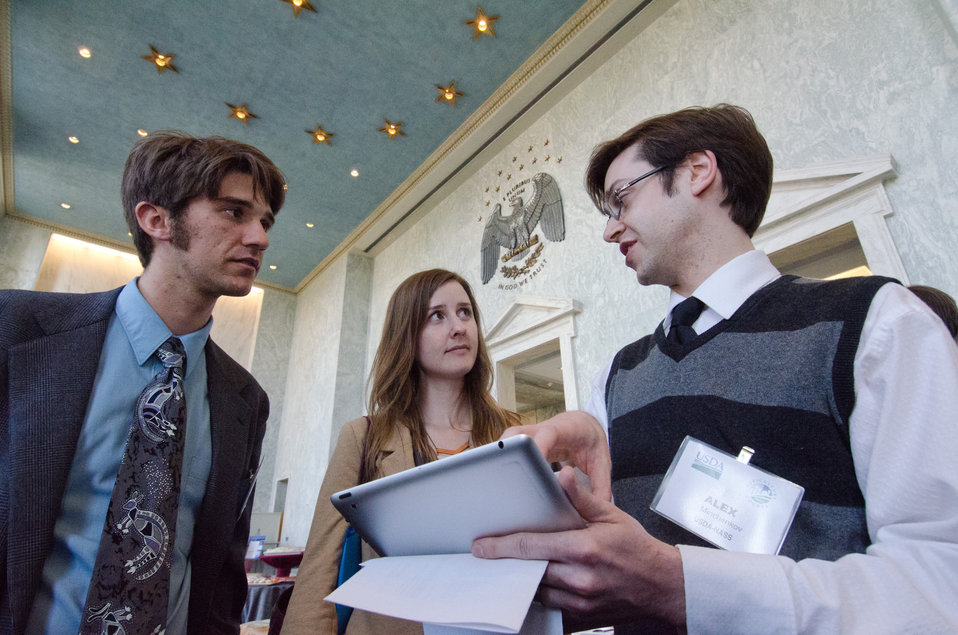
American Geophysical Union’s Jeremy Caves (left) and Elizabeth Landau (center) learns about CAPI- Computer Assisted Personal Interview software from U.S. Department of Agriculture’s (USDA) National Agricultural Statistics Service’s (NASS) Alex Minchenkov (right), during Congressional Visits Day at the Rayburn House Office Building in Washington, DC, on Wednesday, April 6, 2011.
Mr. Minchenkov’s demonstrated how USDA interviewers use “cloud-computing” to generate appropriate questions for people in communities across the United States and it’s territories. The responses are instantly sent from touch pad computers, to web-based storage for instant analysis and then become a public resource for the USDA. Representatives provided information and pamphlets about the Research, Education, and Economics (REE) mission area. The event allows U.S. representatives, staff and Capitol Hill guests the opportunity to learn about the REE mission and benefits to America. REE’s leadership responsibility is to advance scientific knowledge related to agriculture through research, extension, and education.